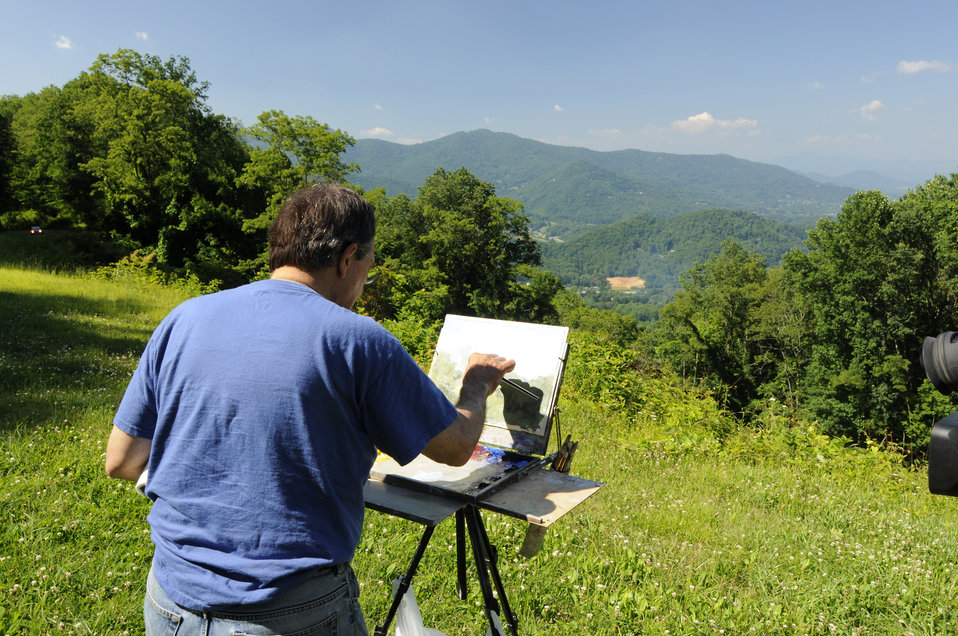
A visitor to a National Forest in North Carolina enjoys painting a beautiful view on June 23, 2009. National Forests offer visitors access to a diversity of outdoor recreational opportunities such as hiking, biking, riding horses, driving off-highway vehicles, picnicking, camping, hunting, fishing, rock climbing, and navigating waterways. Visitors can view wildlife, scenic vistas, and explore historic places.